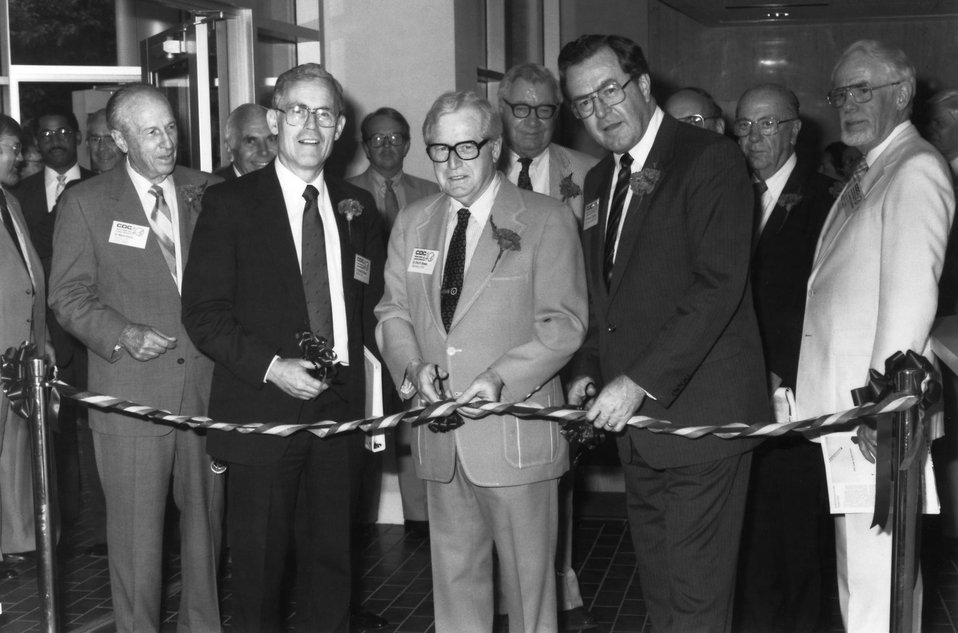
This 1986 photograph shows former Health and Human Services Secretary, Dr. Otis Ray Bowen (center), cutting a ribbon during the CDC's 40th anniversary ceremony.